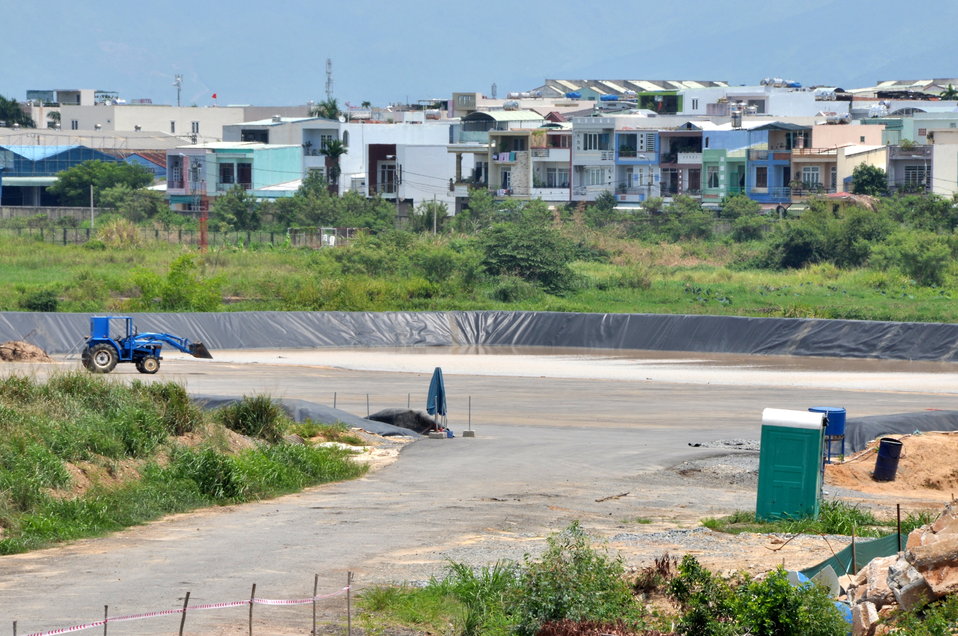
USAID Dioxin Contamination Project Progress

Progress at the Environmental Remediation of Dioxin Contamination Project at Danang Airport

July 16, 2013